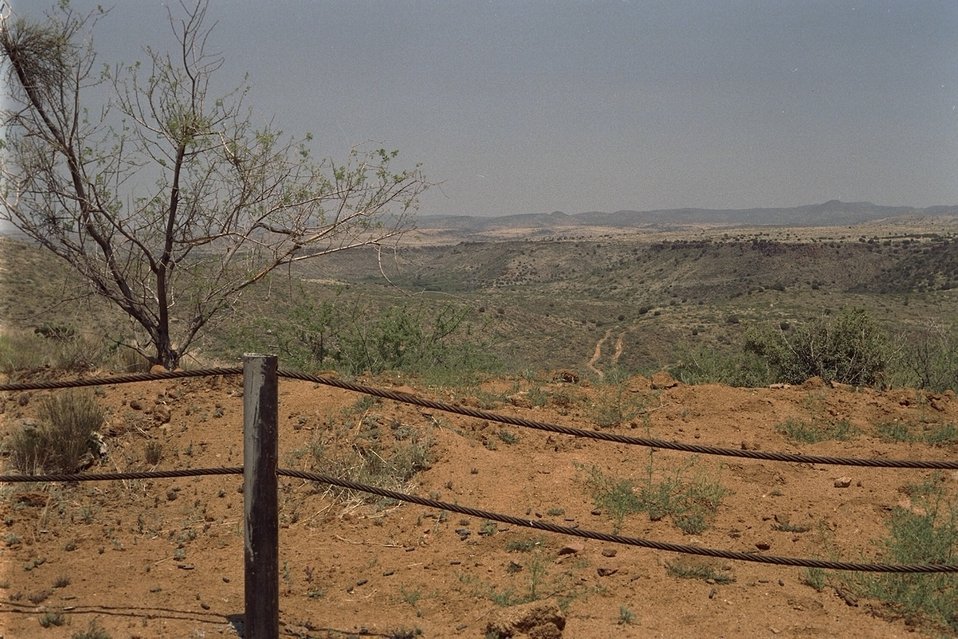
A fence seems ironic in a place like the Agua Fria National Monument, a place so seemingly boundless in its 71,000 acre expanse.